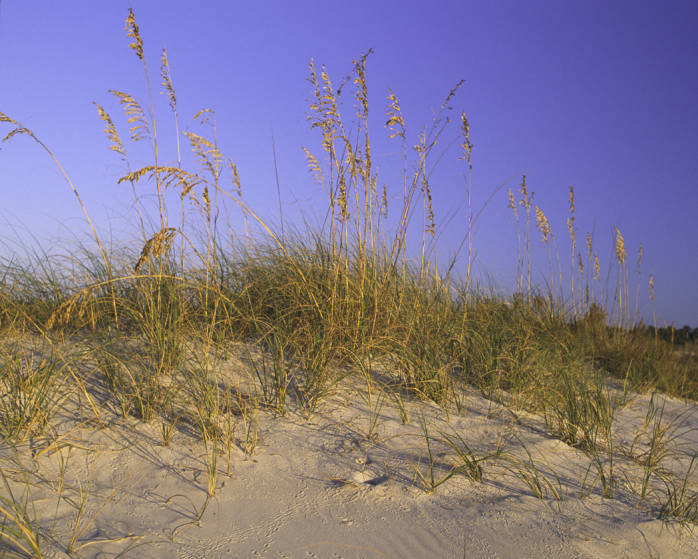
Alabama Sand Dune, USFWS